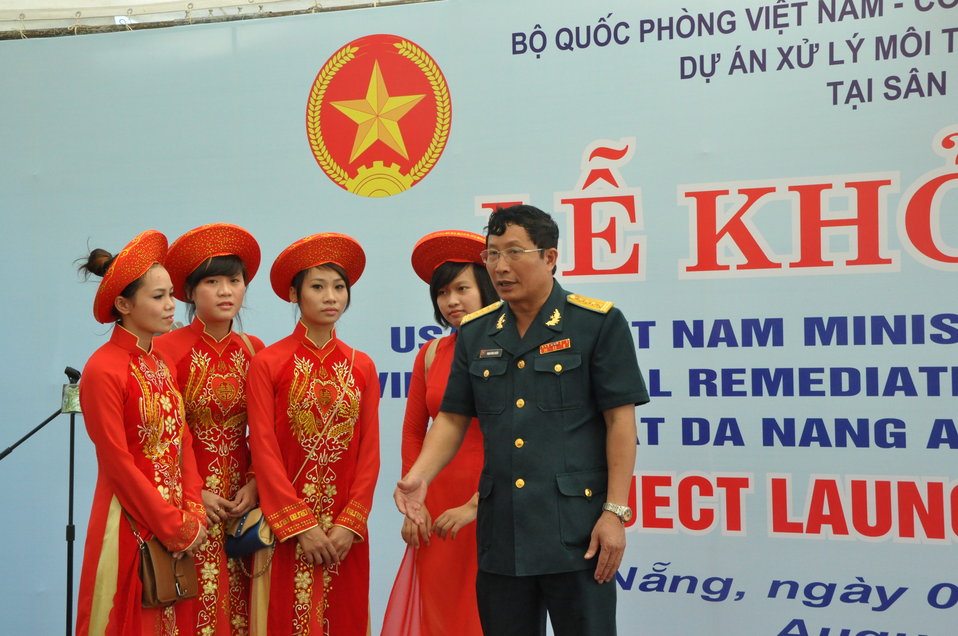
Col. Pham Dinh Chien, Head of Science, Technology and Environment Division - Air Defense Air Force Command, MND - at the Environmental Remediation of Dioxin Contamination at Danang Airport Project Launch

Danang, August 9, 2012